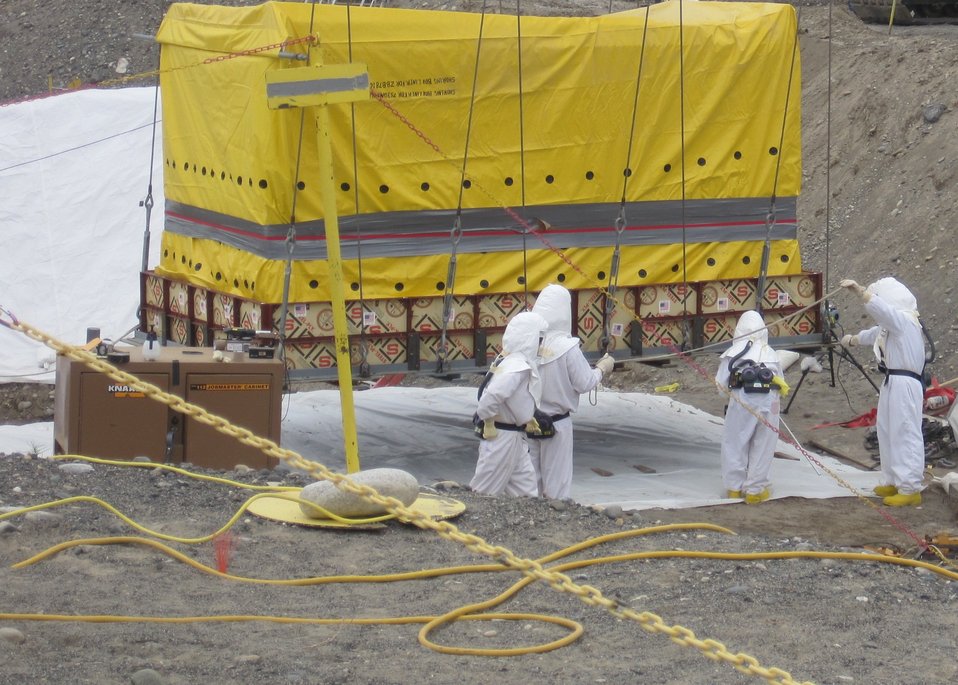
Recovery Act Funds Lead Way to Hanford Cleanup

A box of transuranic waste is removed from an underground storage trench at the Hanford Site.